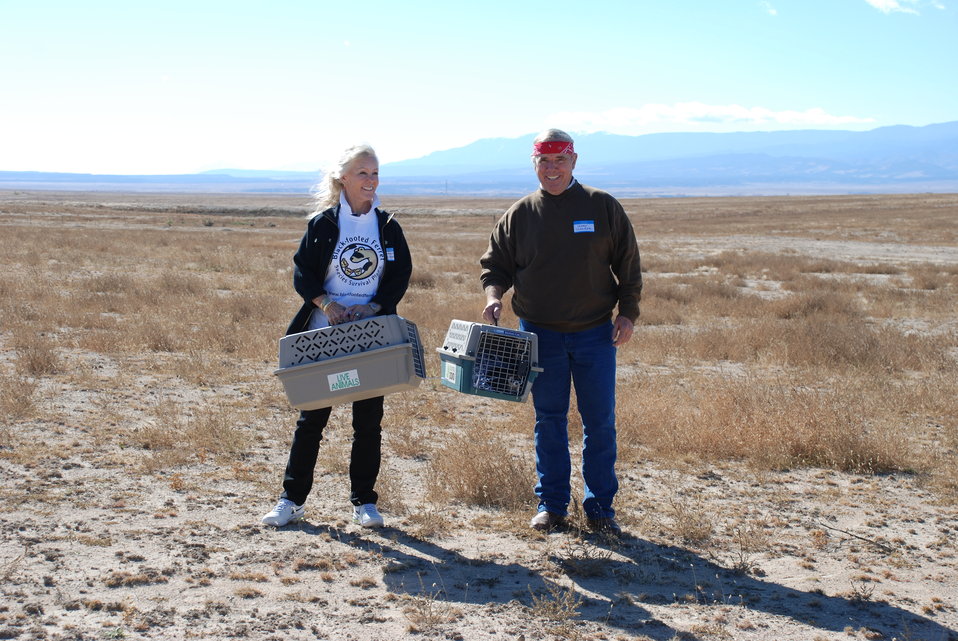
Black-footed Ferret Release

On Wednesday, October 30, 2013, thirty endangered black-footed ferrets were released onto cattle rancher Gary Walker's land, west of Pueblo, Colorado.

The release launched a potentially new way of preserving endangered species and was accomplished by way of a Safe Harbor Agreement (SHA). This SHA provides opportunities for private and Tribal landowners to volunteer their lands for reintroductions of this endangered species without affecting their land-use activities beyond mutually agreed-upon measures. It also extends these assurances to surrounding non-participating lands and other landowner interests. This SHA will be an important step in promoting the recovery of this iconic species.